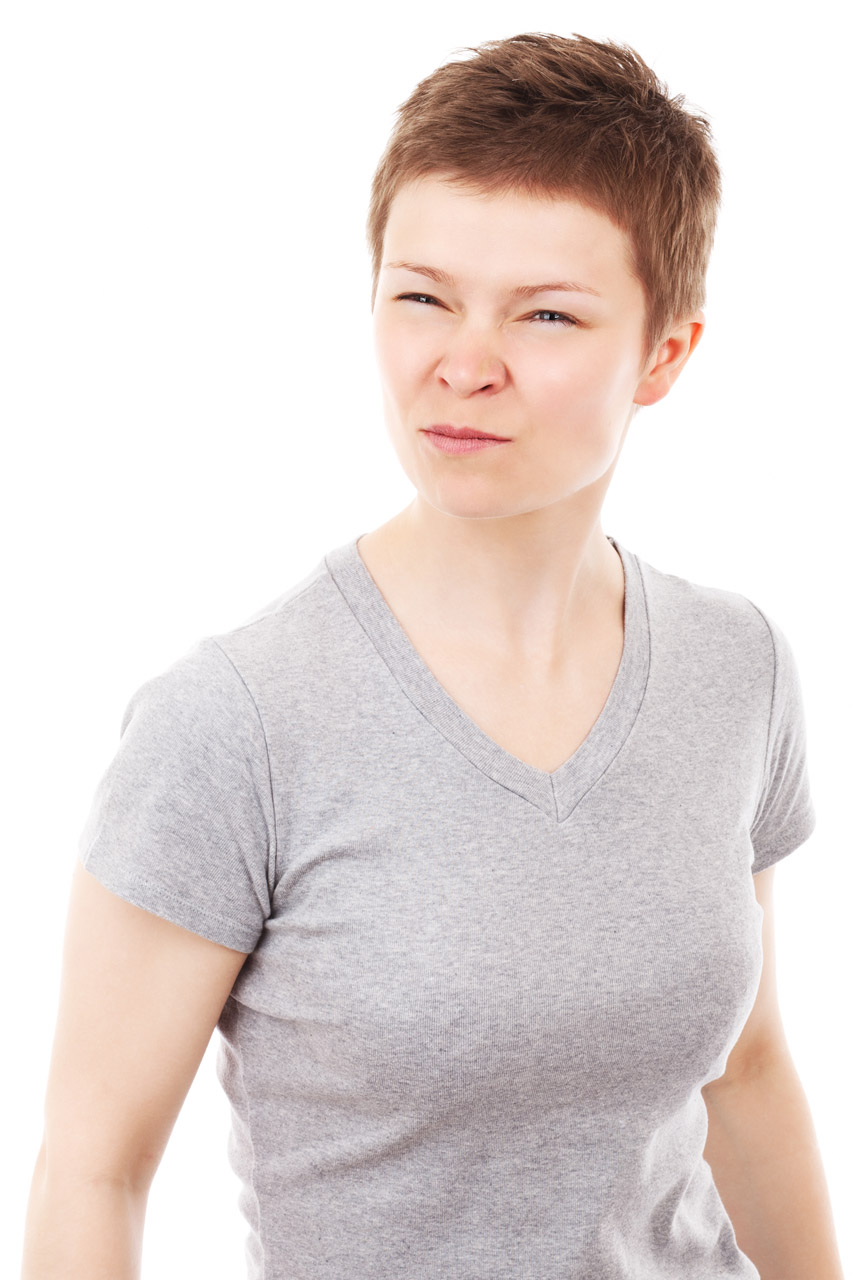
Annoyed woman

Angry young woman isolated on white background.